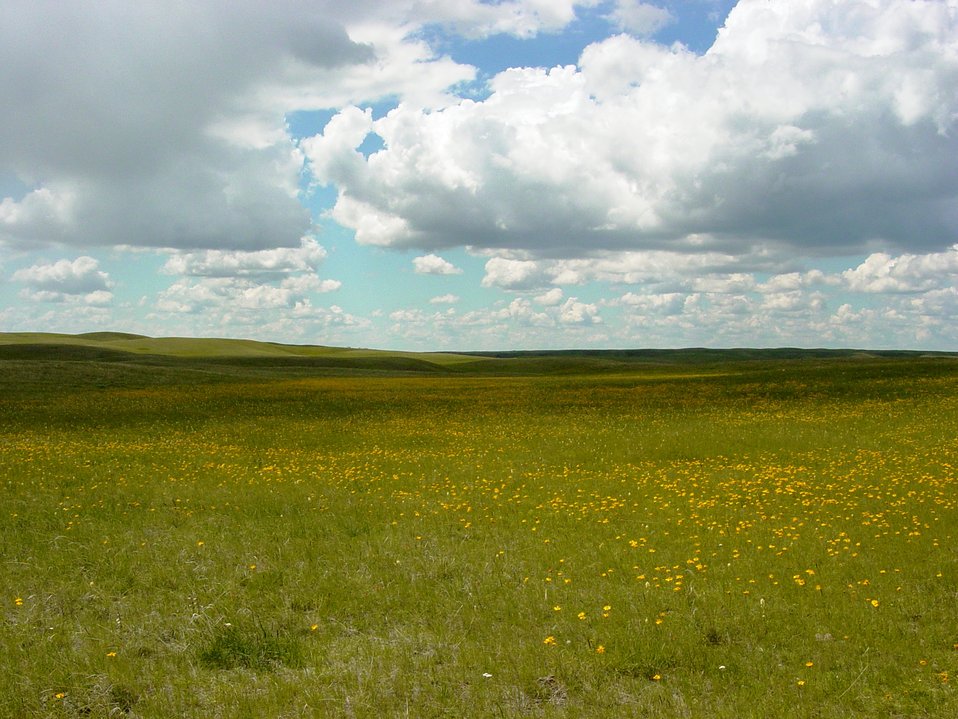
Mixed-grass Prairie in the Bowdoin WMD

Big sky and native prairie in the Bowdoin Wetland Management District